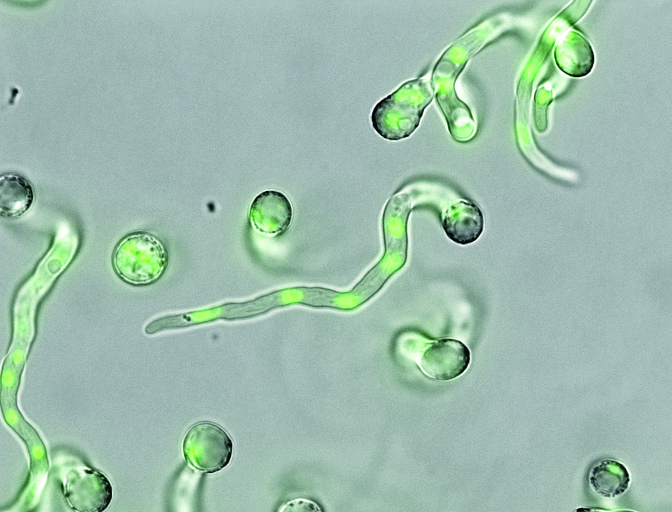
At Pacific Northwest National Laboratory, Aspergillus Niger, shown here with its DNA lit up in green is a fungus that can be used on an industrial scale to 'grow' important chemicals such as citric acid.
Understanding its genes will help researchers tame it for other purposes, such as grow biofuels to replace fossil fuels.